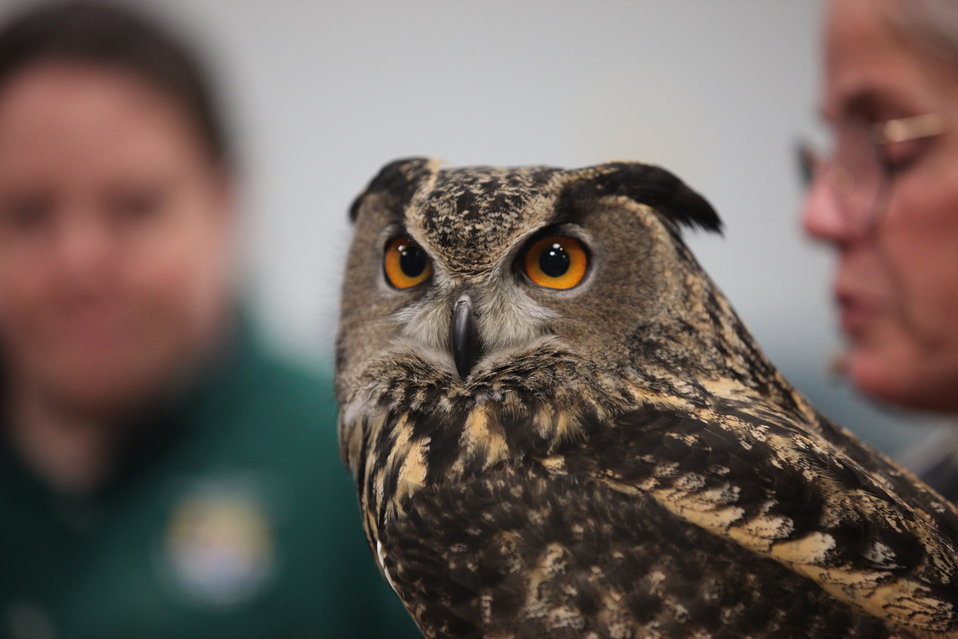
Great Horned Owl

Close-up of Great Horned Owl.